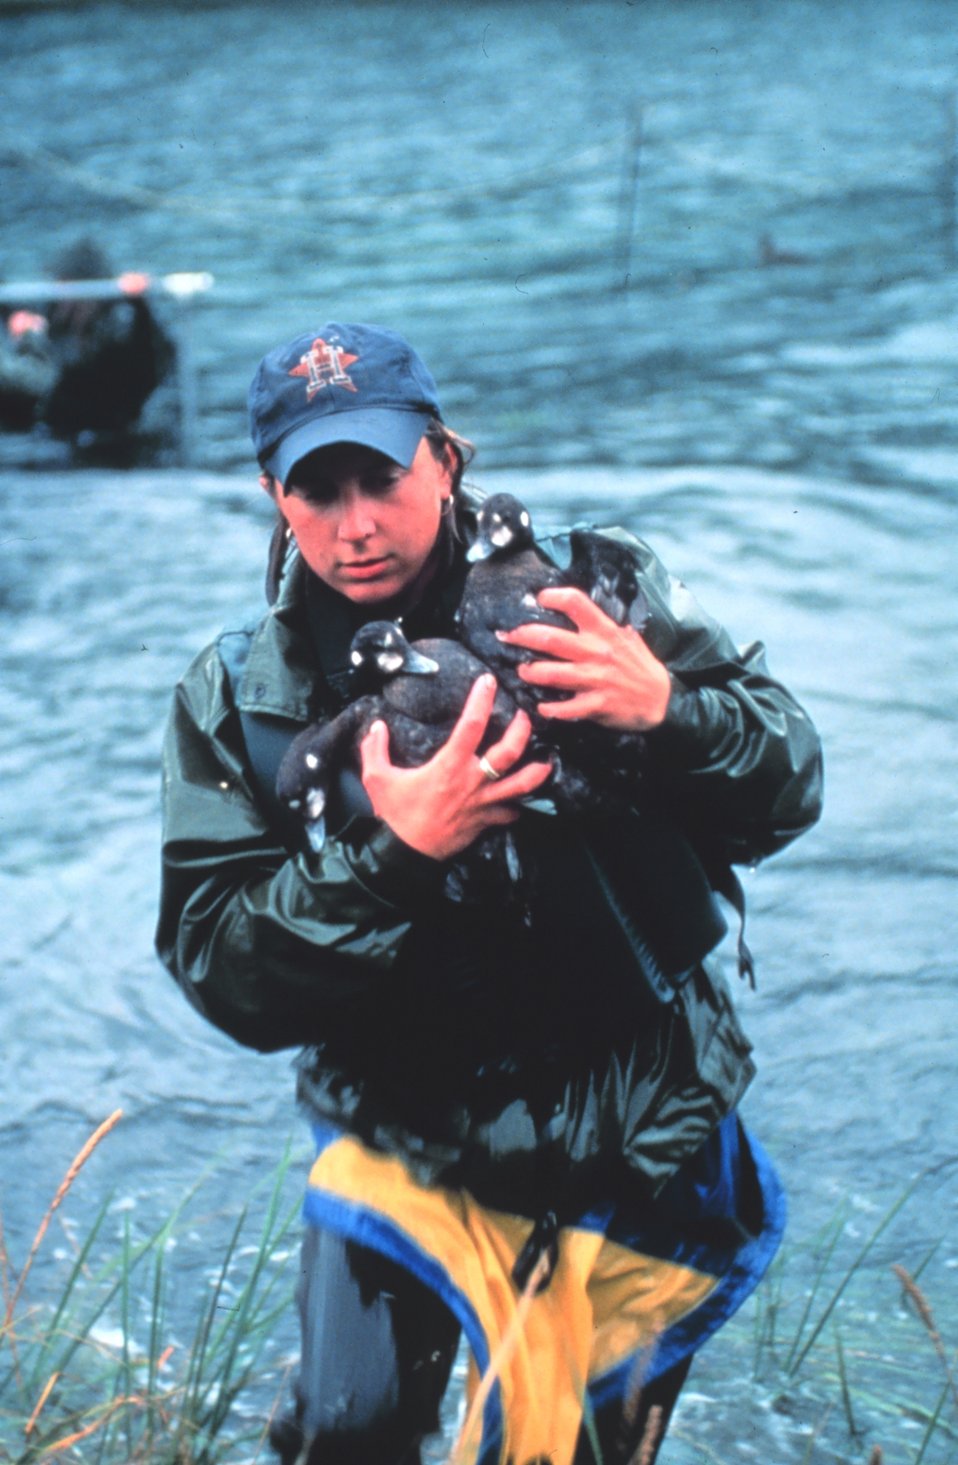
Rescuing waterfowl from oiled waters